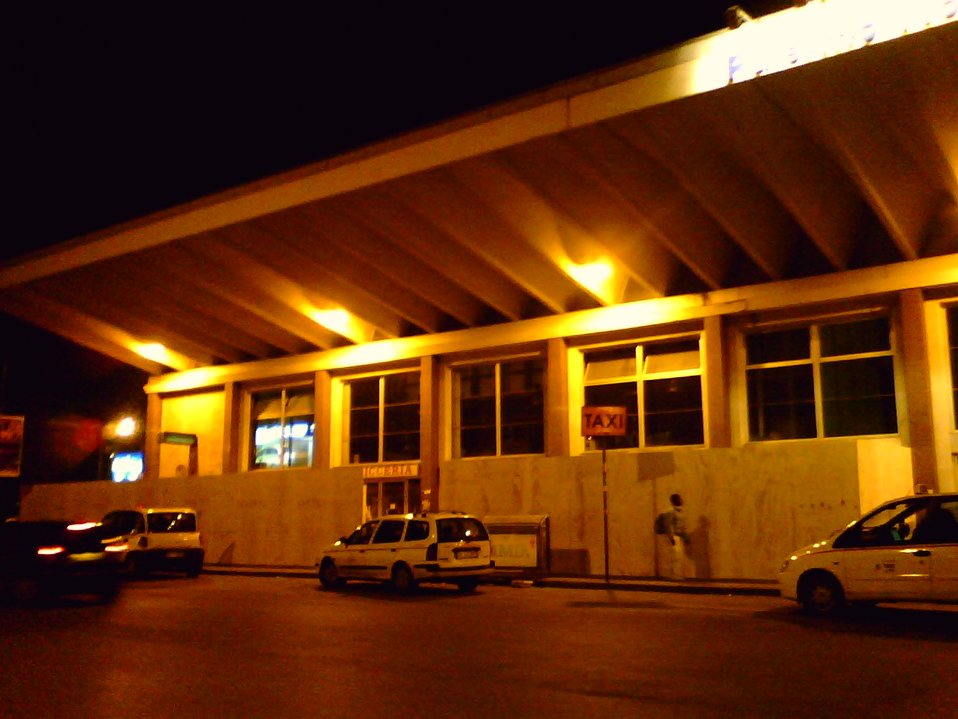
Italiano: Stazione FFSS di Palermo Notarbartolo durante i lavori